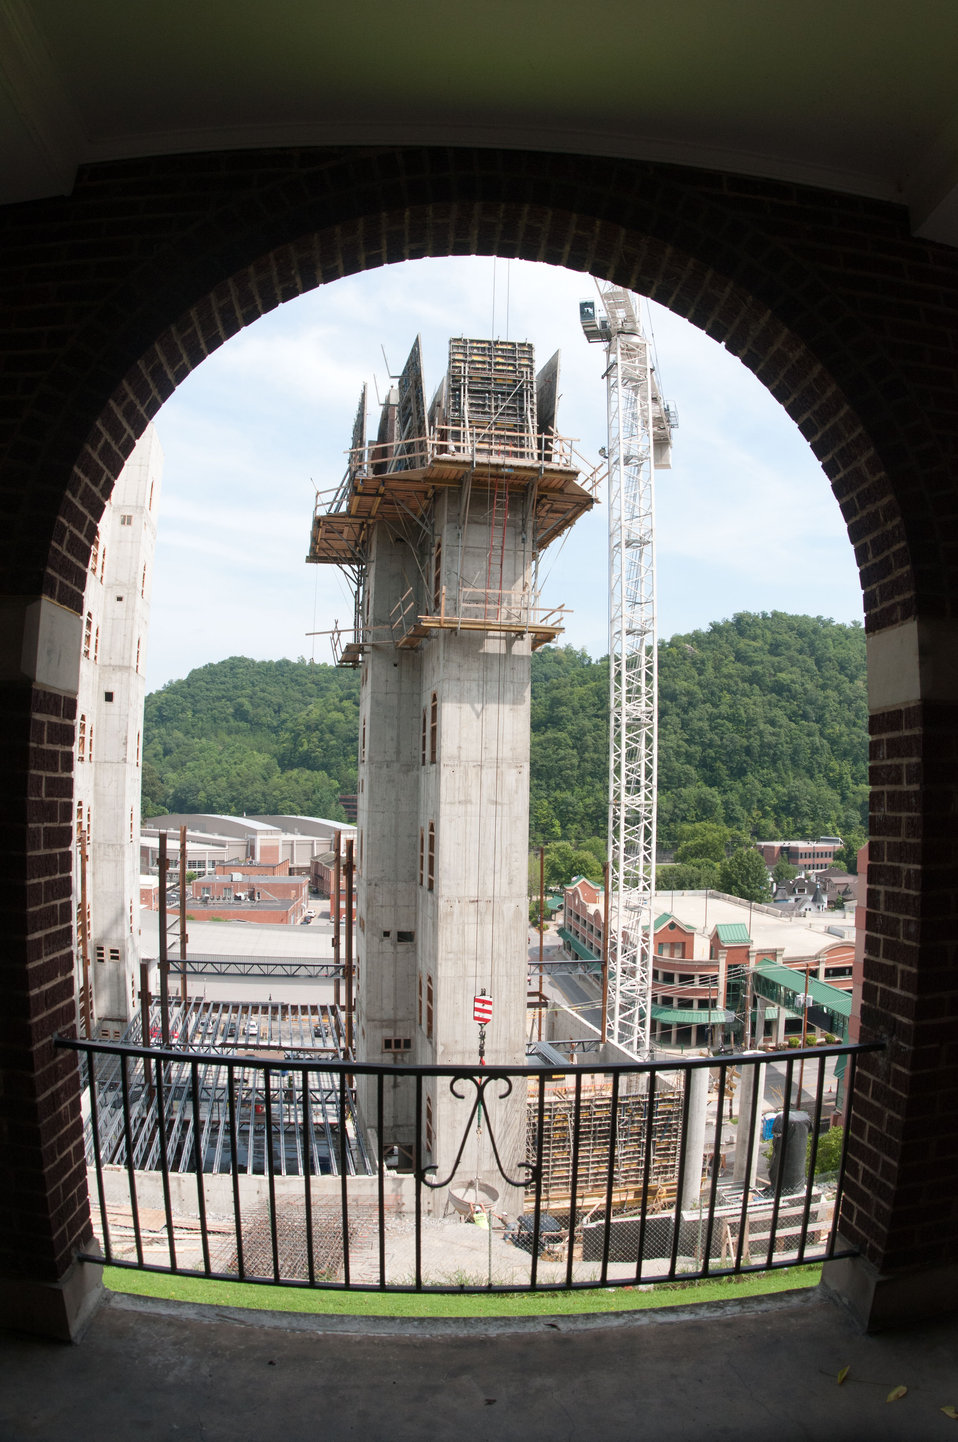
Framed in a dormitory arch, an elevator shaft, the core structure of the $25 million expansion project at University of Pikeville Kentucky College of Osteopathic Medicine (UP-KYCOM) can be seen in Pikeville, KY, on Tuesday, July 12, 2011.